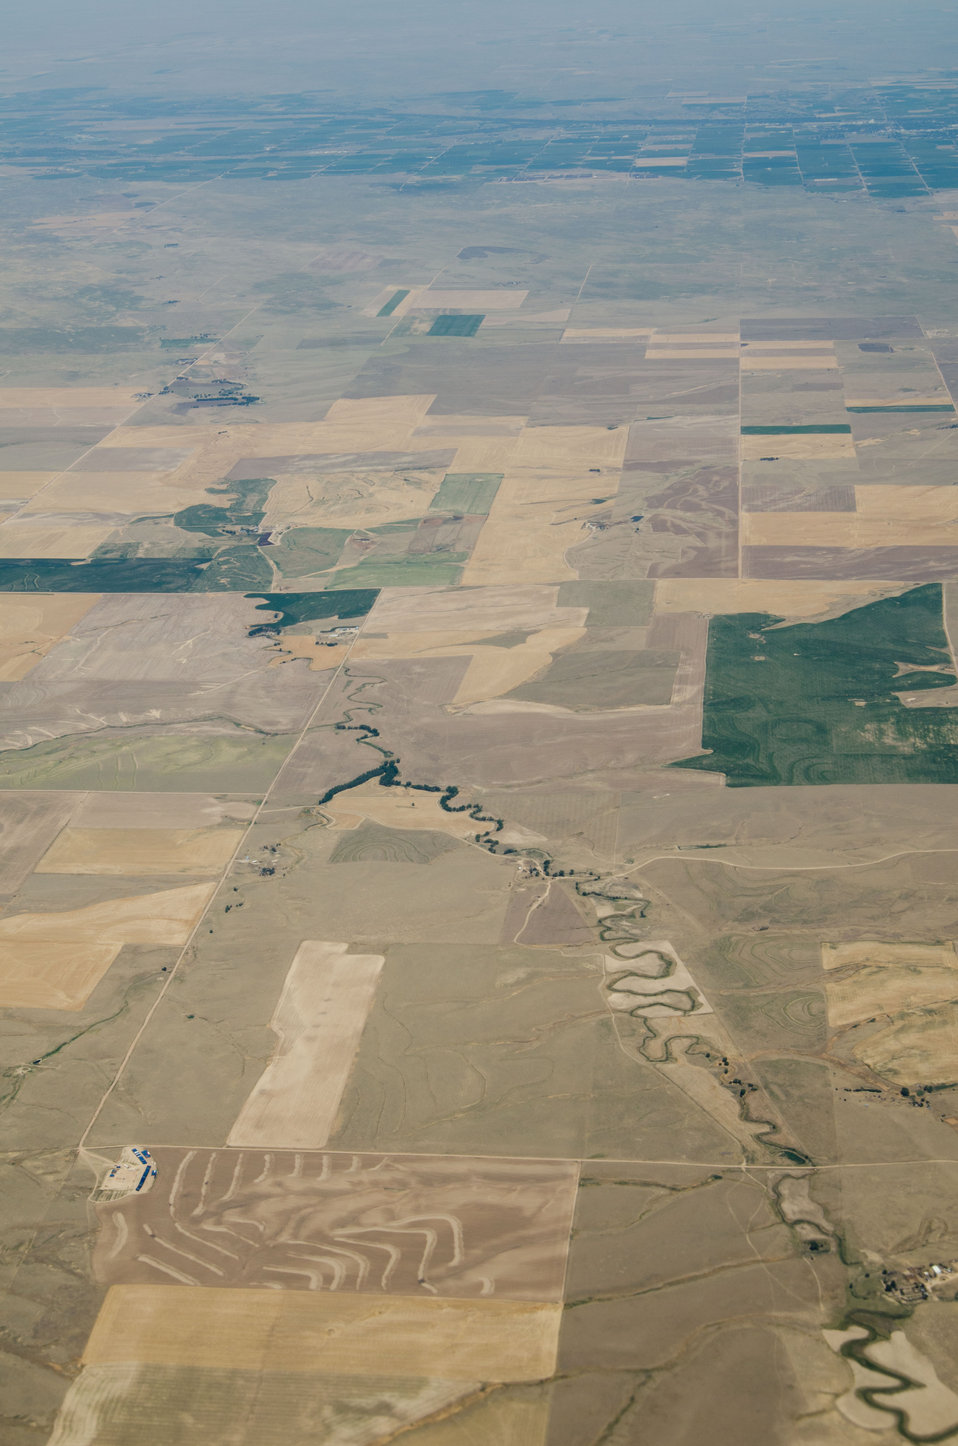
Aerial views of drought affected Colorado farm lands, 107 miles east of Denver, Colorado on Saturday, July 21, 2012. Green areas are irrigated, the yellow areas are dryland wheat crops.